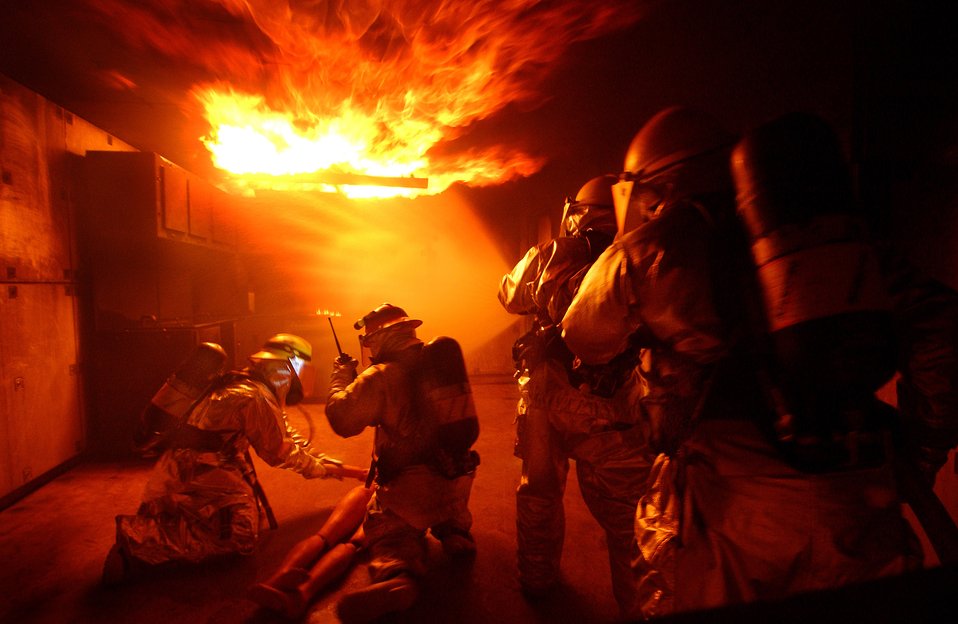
When you're hot, you're hot

Airmen from the 18th Civil Engineer Squadron Fire Department conduct training at the Silver Flag area of Kadena Air Base, Japan, Dec. 2 during Beverly High 09-01. The local operational readiness exercise tests the readiness of Kadena's 18th Wing Airmen.